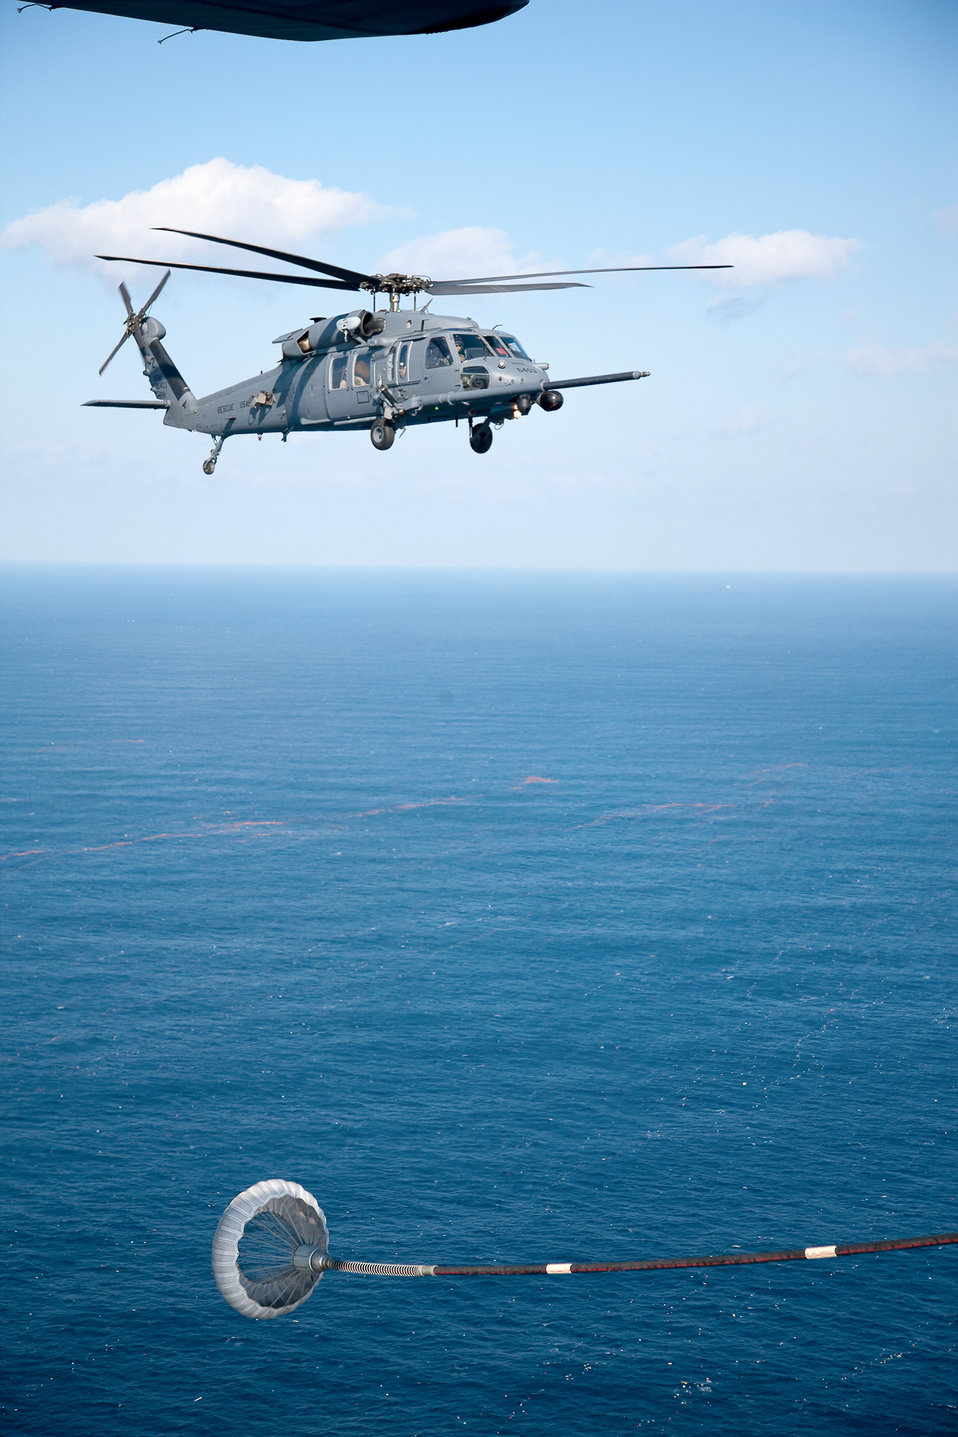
Crew conducts refueling

An MC-130P Combat Shadow prepares to refuel an HH-60 Pave Hawk helicopter March 18, 2011, above the Pacific Ocean. The refueling missions are in support of humanitarian relief operations after an earthquake and subsequent tsunami rocked Northeastern Japan.